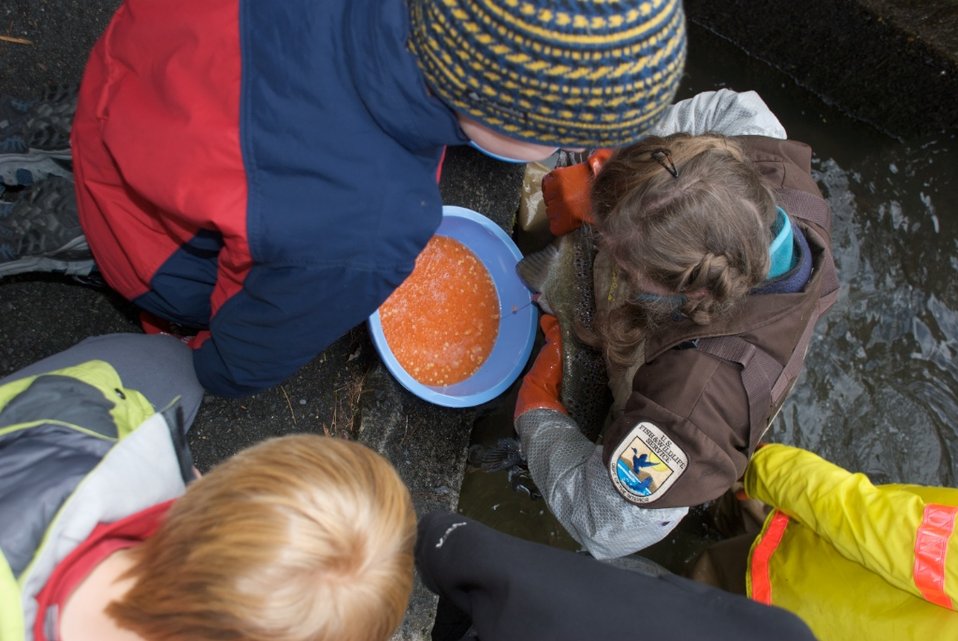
Richard Cronin National Salmon Station

Volunteers harvesting salmon eggs and showcasing for an elementary school class at the Richard Cronin National Salmon Station in Sunderland, MA.